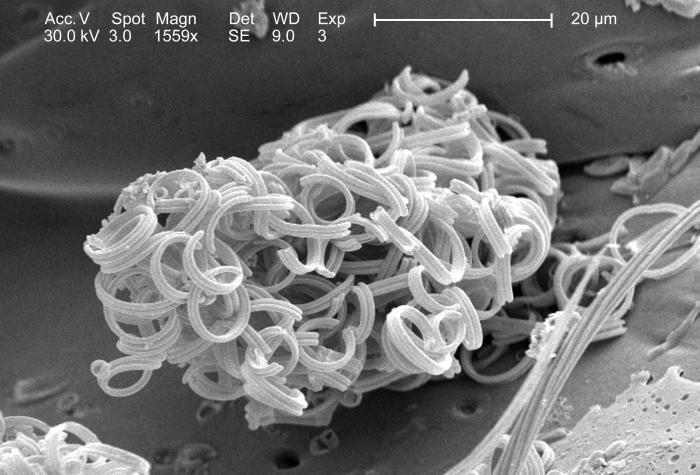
This scanning electron micrograph (SEM), magnified 1559x, revealed some interesting morphologic shapes manifested by the microscopic debris that was attached to the exoskeletal surface of an unidentified insect. These particulates were predominantly made up of vegetative matter such as pollen granules, fungal gametes, and disintegrated plant tissues. Also note the few sensorial 'hairs' in the field of view.